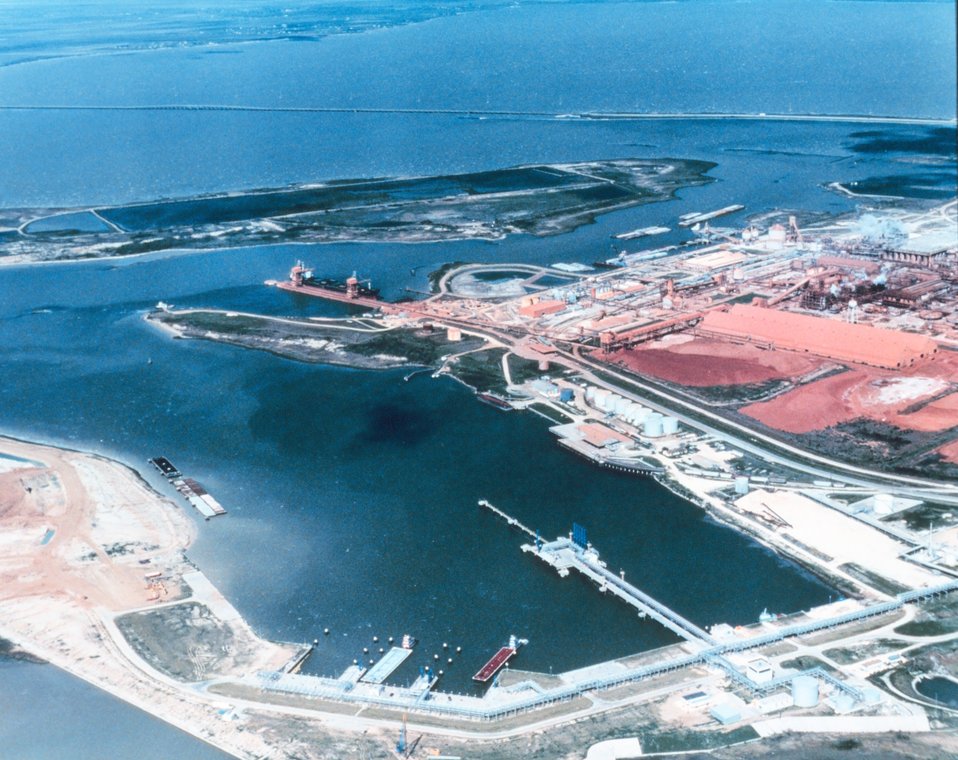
2827 North Latitude 9624 West Longitude.